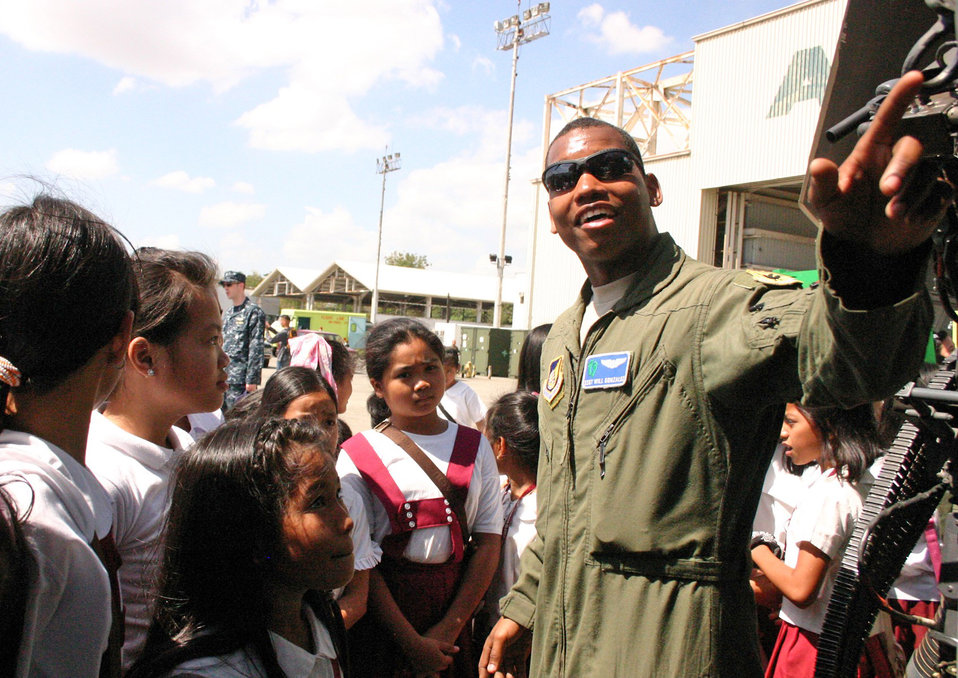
Students get first look at Philippine, U.S. militaries

Staff Sgt. Will Gonzalez talks about the HH-60G Pave Hawk with Philippine students during their visit to the flightline March 15, 2010, at Freeport Clark, Philippines. Sergeant Gonzalez is assigned to the 33rd Rescue Squadron at Kadena Air Base, Japan.